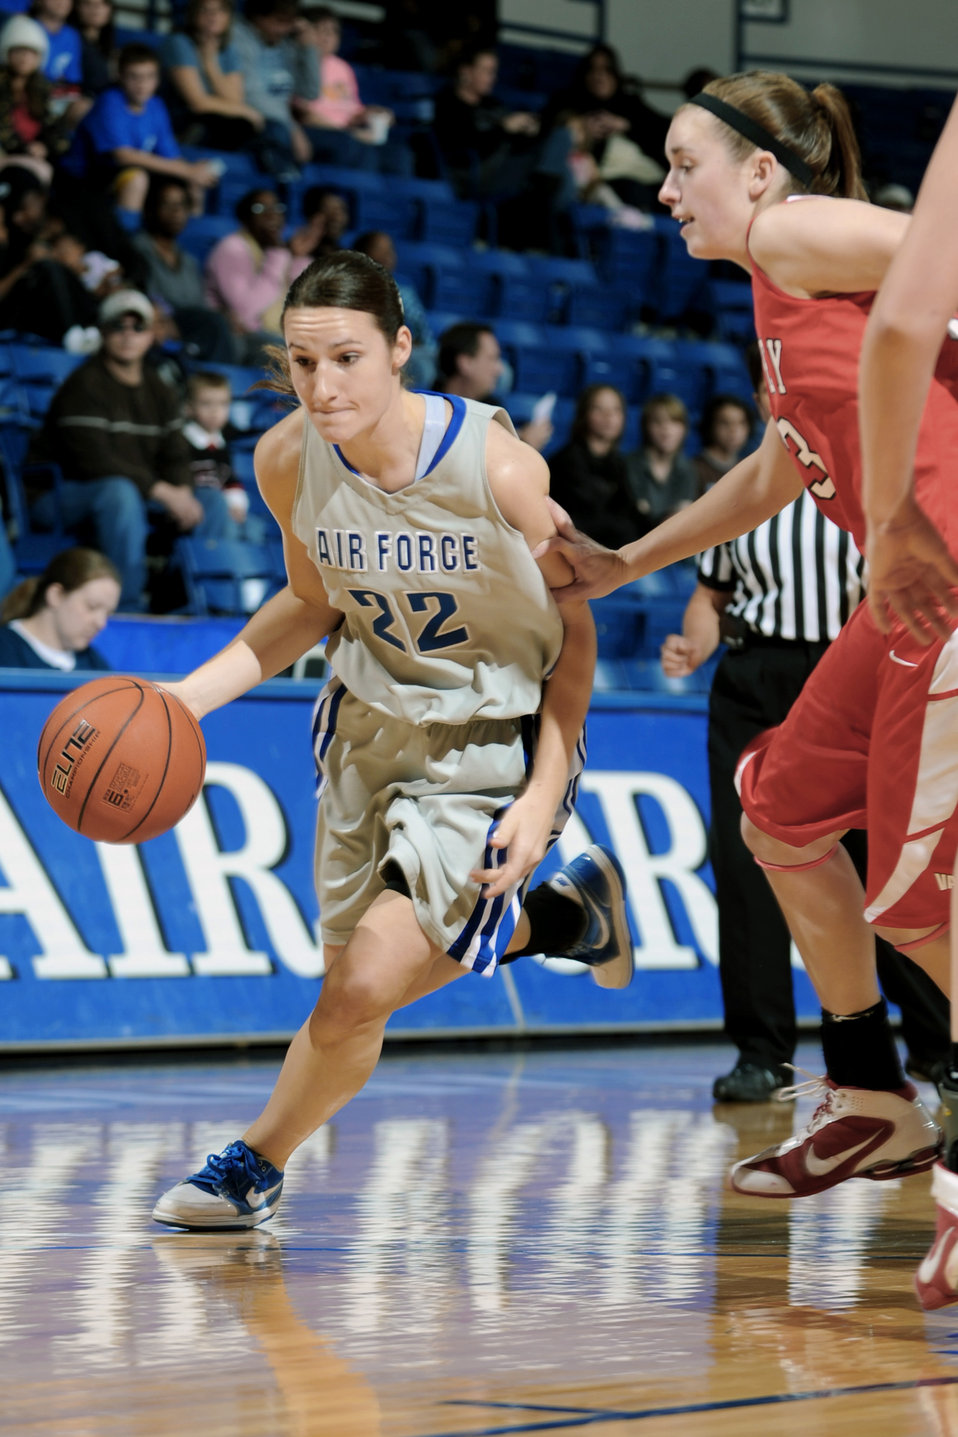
Women's basketball: Bradley University runs past Air Force

Falcon junior guard Raimee Beck drives toward the basket past Braves Lauren Niemiera, a sophomore guard, during the U.S. Air Force Academy game against Bradley University at the Academy's Clune Arena Dec. 19, 2009. Air Force lost the game 62-45.